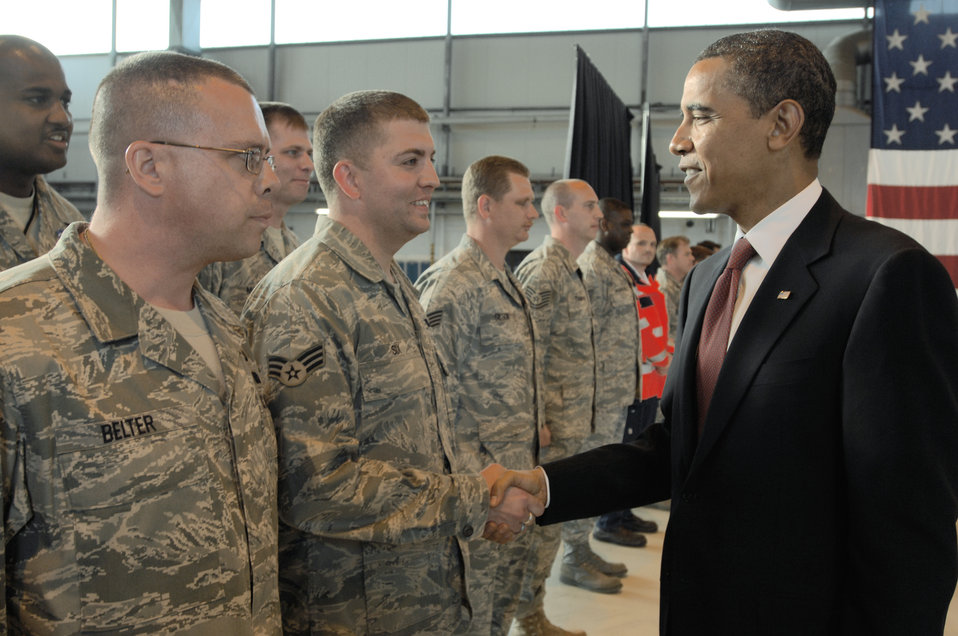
President makes stop at Ramstein Air Base

President Barack Obama meets with Airmen June 5 during a stop Ramstein Air Base, Germany. The president was en route to nearby Landstuhl Regional Medical Center, Germany, to visit wounded U.S. servicemembers being treated there.